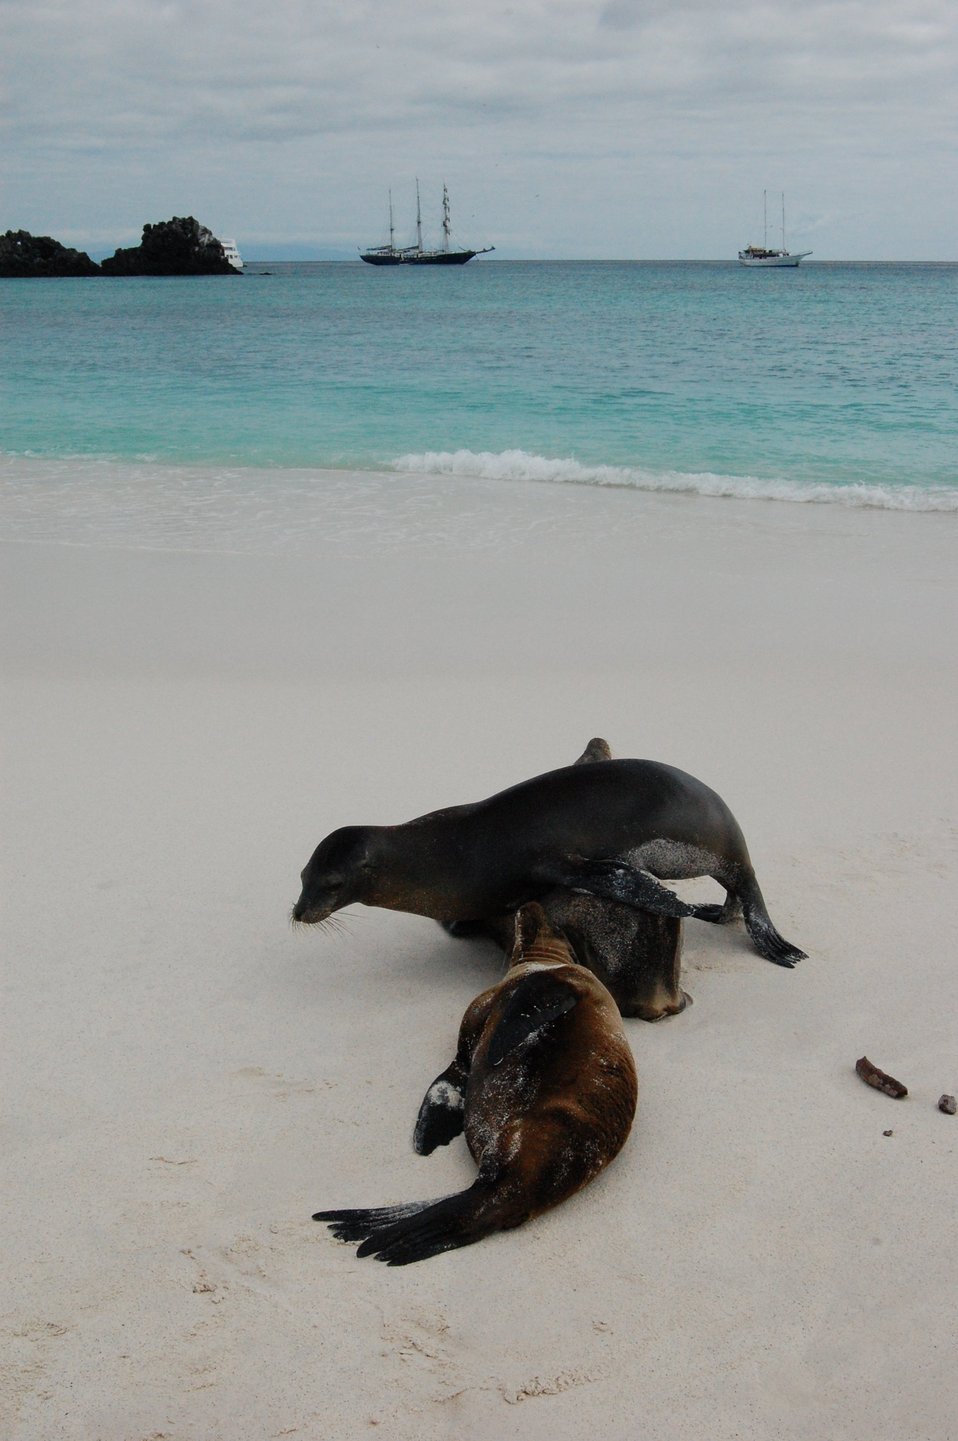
Sea lion playing leapfrog. Photo #2